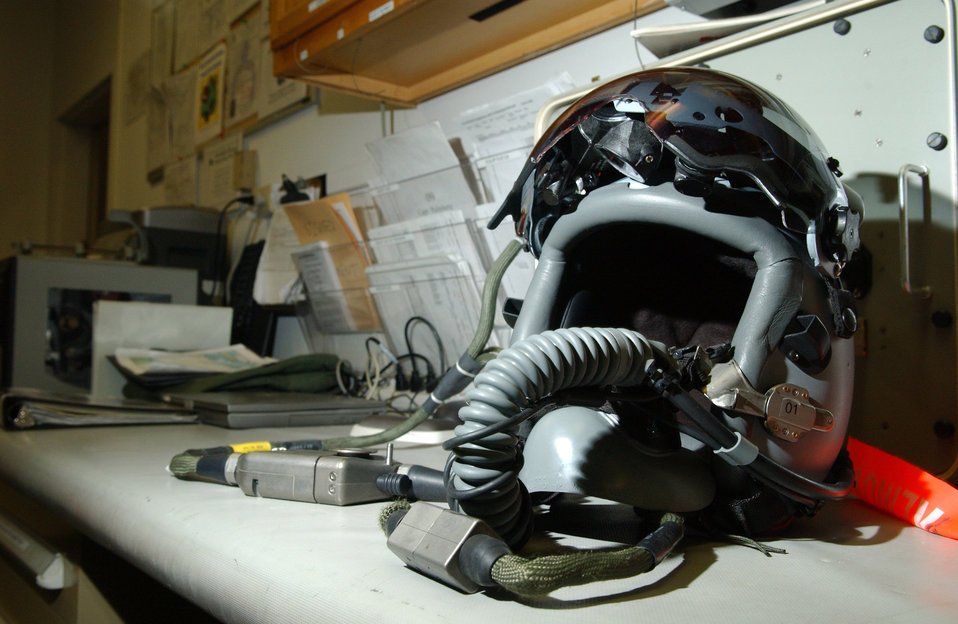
New helmet gives pilots the edge

A newly improved fighter pilot helmet with a mounted video camera sits Feb. 21 at the 18th Fighter Squadron at Eielson Air Force Base, Alaska. The new helmet mounted queing system has targeting technology that projects holographic data on the inside right of the visor in the form of a container, or que and allows pilots to continually survey and distinguish between friendly and enemy air and ground targets.